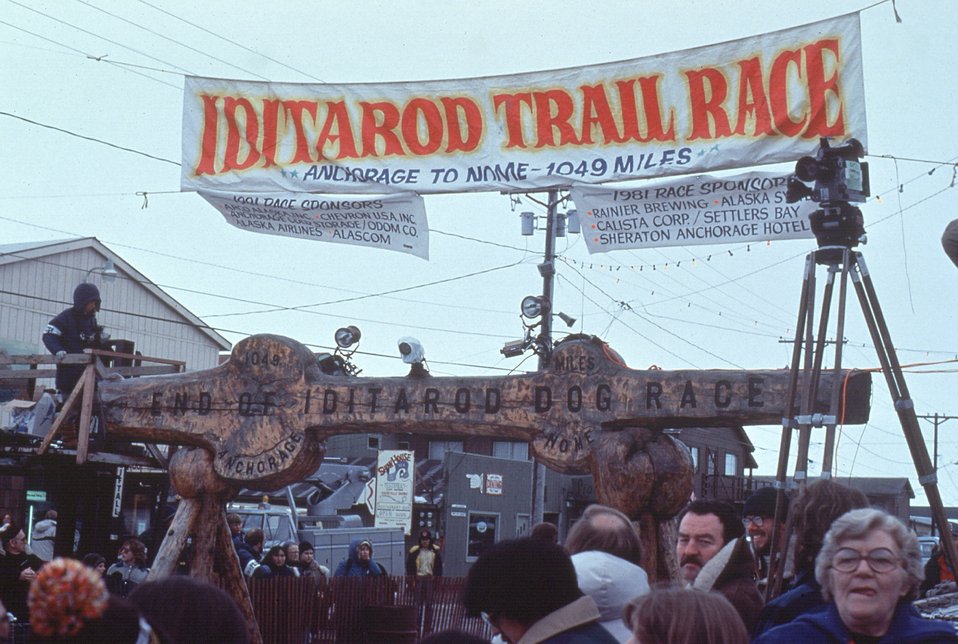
Iditarod Trail finish line, Nome